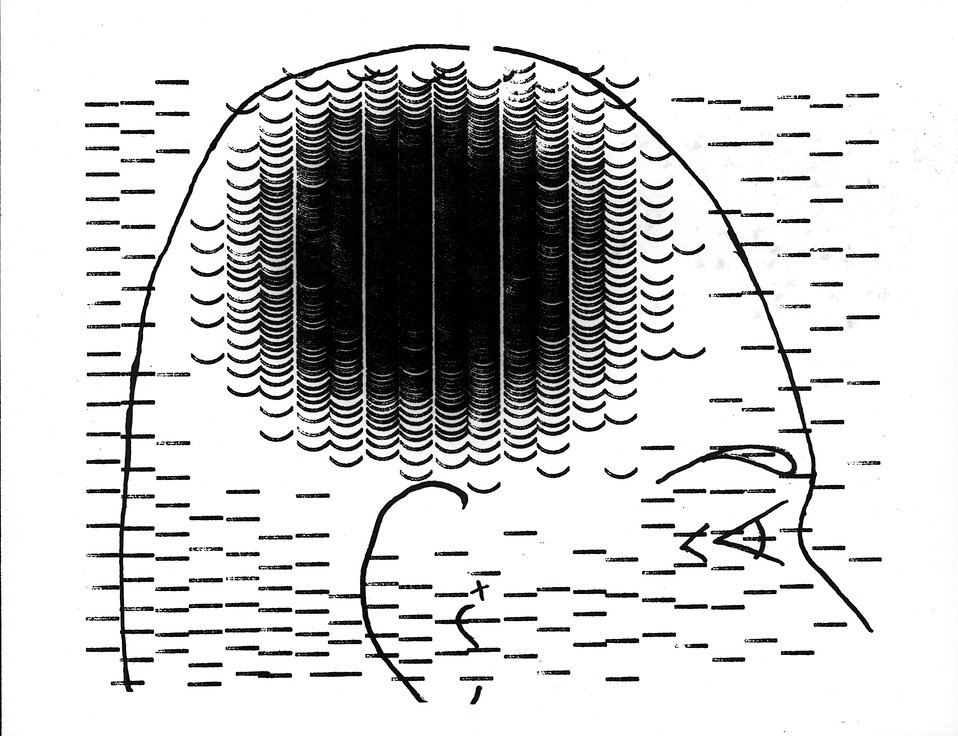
Brain scan made with positron scanner and arsenic. Curved markings indicate increased uptake to right of the midline, and straight markings increased uptake to the left. Circa 1964.